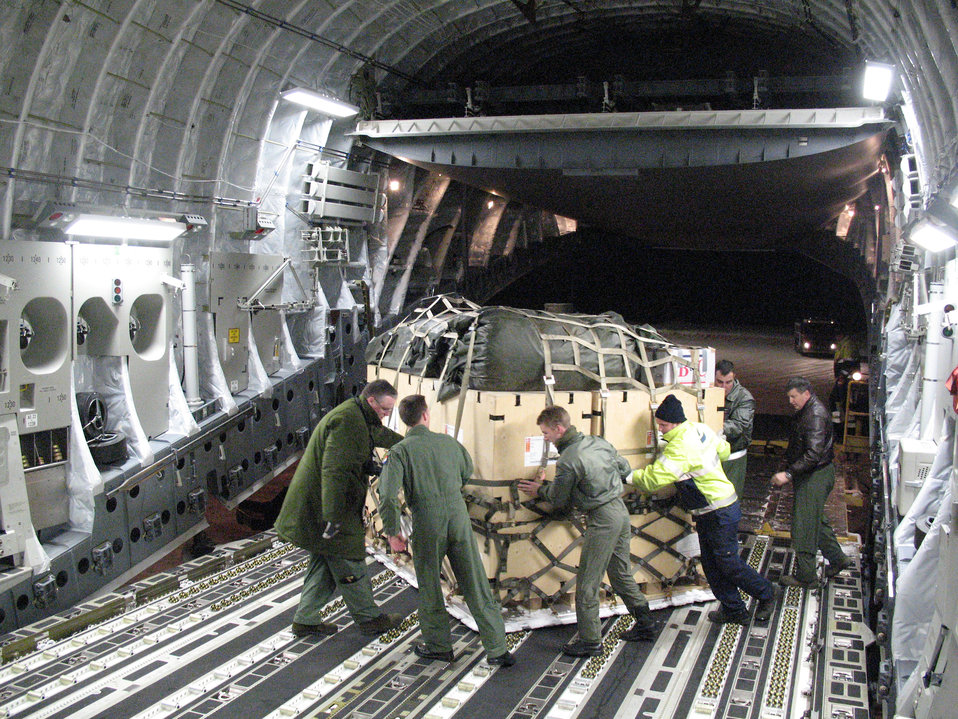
Multinational aid delivered to Haiti

A multinational aircrew from the Heavy Airlift Wing out of Papa Air Base, Hungary, loads a C-17 Globemaster III with aid supplies and equipment coming out of Orebro, Sweden, for its second mission to Port-au-Prince, Haiti. The first load of materials was delivered Jan. 18, 2010, to Port-au-Prince's main airport. The air relief is being delivered in response to a massive earthquake that struck Haiti Jan. 12, 2010. This is the first humanitarian assistance operation flown by the Heavy Airlift Wing since it stood up in July 2009. The wing is a multinational force made up of airmen from 12 nations.